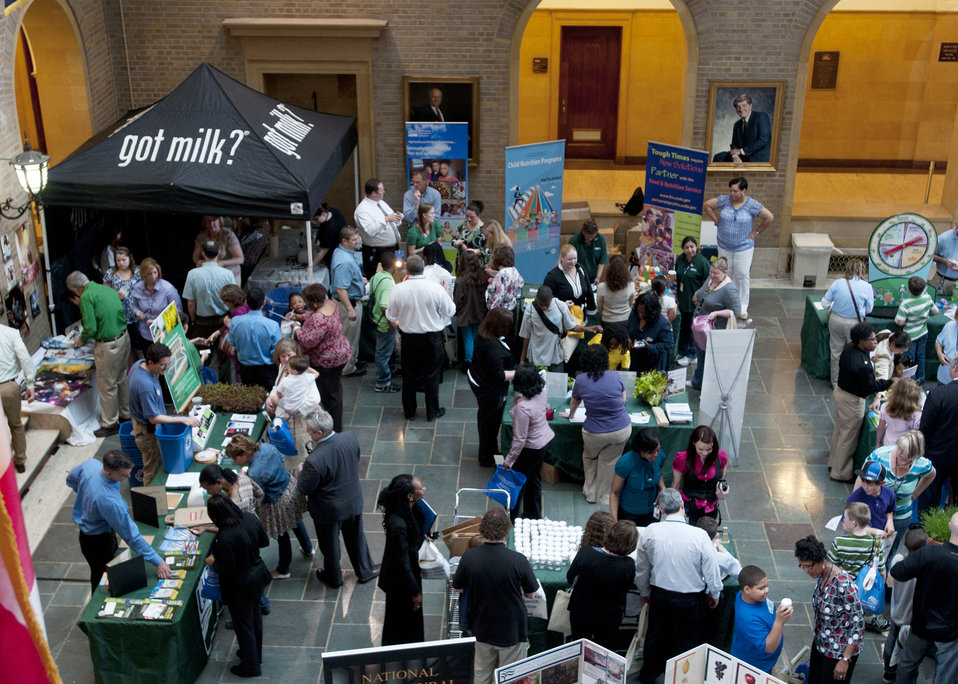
The U. S. Department of Agriculture (USDA) held its annual “Take Your Child to Work Day” on the patio of the Whitten Building, in Washington, DC, on Thursday, April 28, 2011. The program is designed to introduce young people to USDA’s wide range of responsibilities and services.